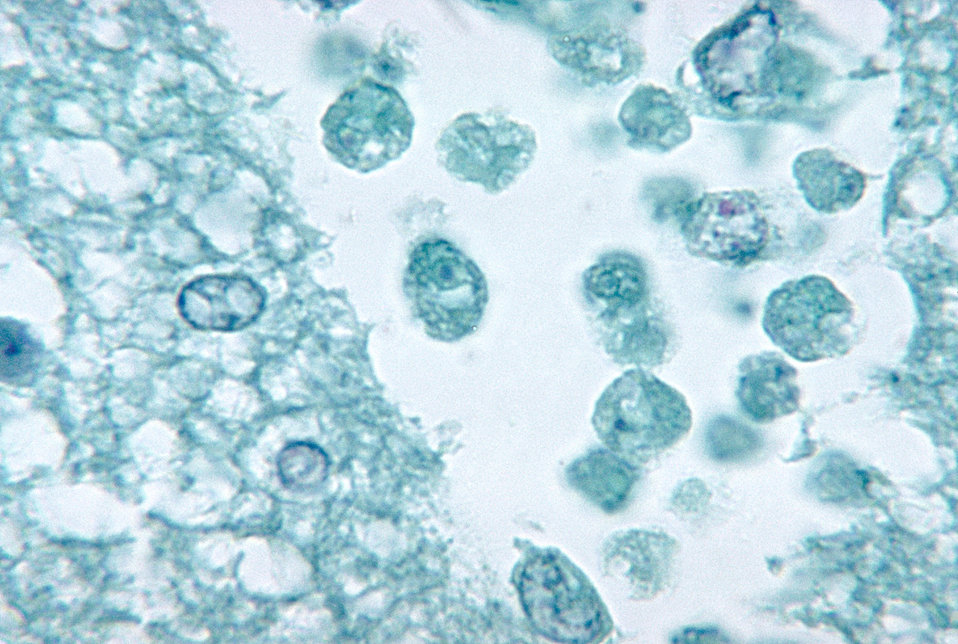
This photomicrograph of a brain tissue specimen depicts the cytoarchitectural changes associated with a free-living, Naegleria fowleri, amebic infection. Free-living amebae belonging to the genera Acanthamoeba, Balamuthia, and Naegleria are important causes of disease in humans and animals, though only one specie of Naegleria, Naegleria fowleri, causes disease in humans.